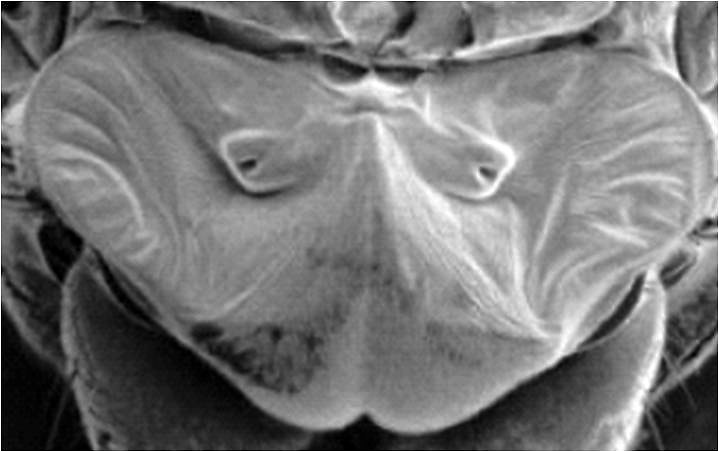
Research into flies' hearing could aid UAS program

This image depicts a fly's ear, which is being used as a model for research at the University of Maryland for miniature acoustic sensors and sound localization techniques.